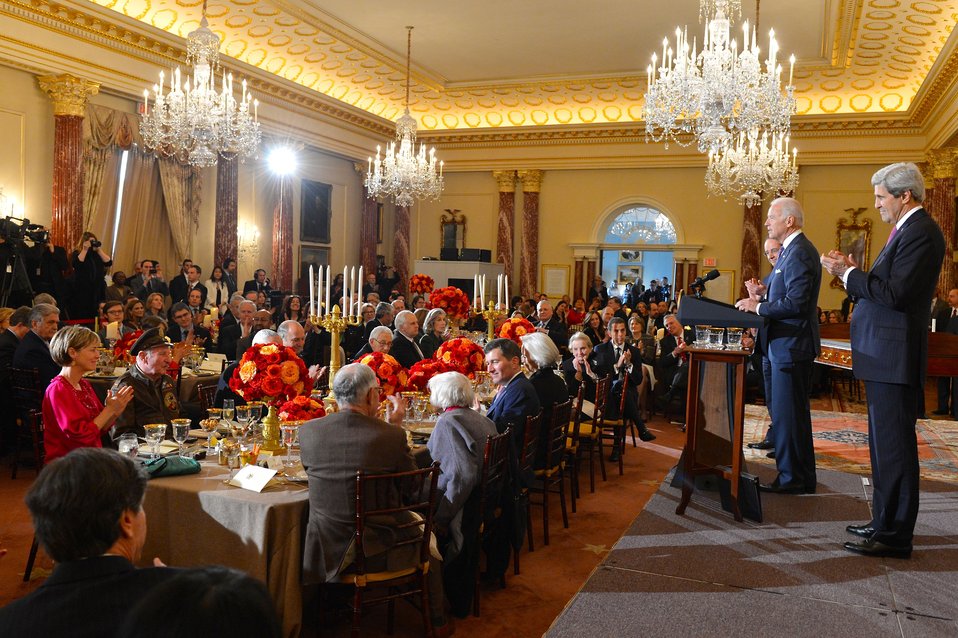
Vice President Biden Toasts the U.S.-France Friendship

With U.S. Secretary of State John Kerry and French President Francois Hollande looking on, Vice President Joe Biden makes a toast to the U.S.-France relationship during a State Lunch in honor of President Hollande at the U.S. Department of State in Washington, D.C,, on February 11, 2014.